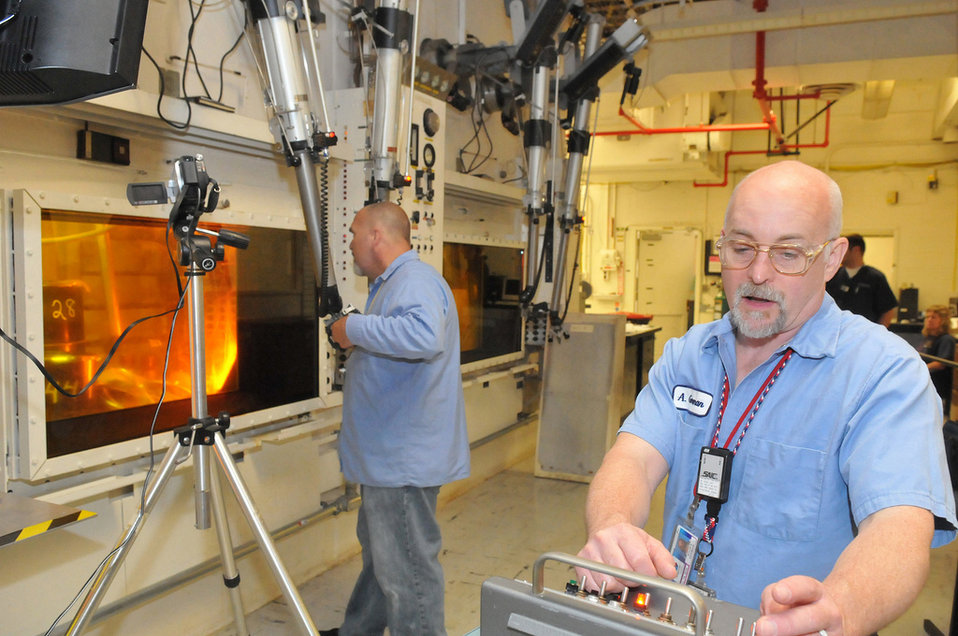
Hot cell techs working in the Alpha Gamma Hot Cell Facility. Remote-handled transuranic waste (RH-TRU) is packaged and certified in the hot cell. The waste will be transported to the WIPP for disposal.

The Next-Phase Transuranic Waste Project is squarely focused on reducing the quality of transuranic waste currently housed at Argonne. Removal of this material supports Argonne's overall goal of reducing its nuclear footprint. The project accelerates work that has already begun by providing additional resources to drive projects across the site.